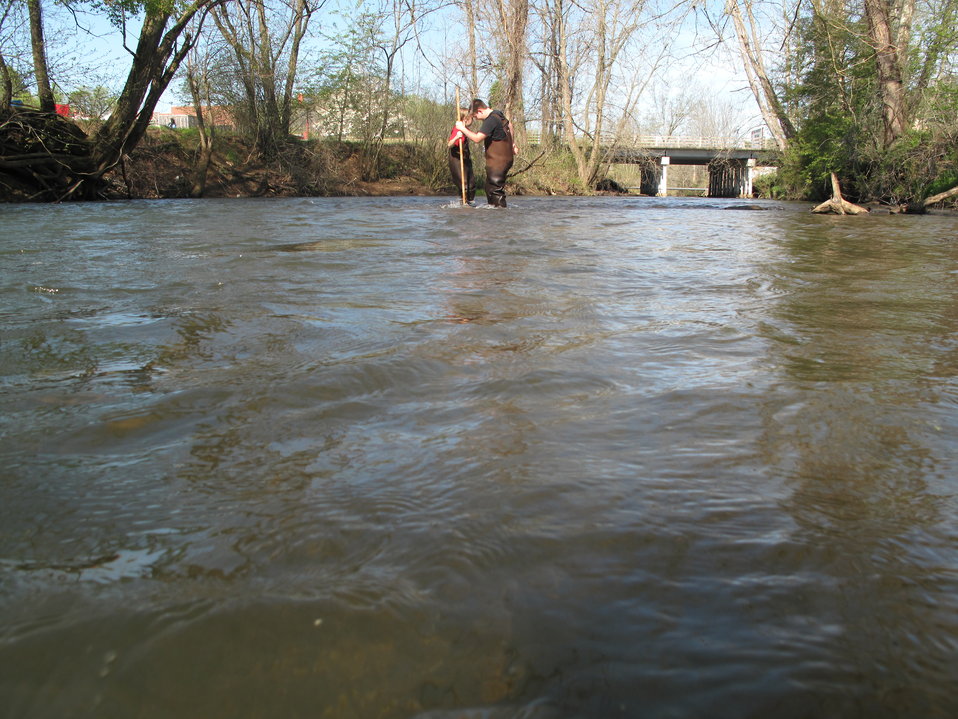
Pari of students kicking up insects

Over the course of four days in late April 2014, every eighth grade student at North Carolina’s Macon Middle School, Highlands School, Nantahala School, and Trimont Christian Academy visited Cartoogechaye Park, in Macon County, to learn about rivers.

The students rotated through four stations:
1) water chemistry where they had the opportunity to help test water from Cartoogechaye Creek to gain an idea of the stream’s water quality;
2) aquatic insects, where students collected and identified animals like mayflies and caddisflies, learning how life in the river reflects the health of the river
3) fish, where they were able to collect and identify fish in the stream, and then
4) stream flow, where they measured and calculated the downstream movement of water, including the velocity of the water and the total volume of water being moved per second.

The event was organized by the University of Georgia's Coweeta Long-Term Ecological Research (LTER) Program, which is based at the USFS Coweeta Hydrologic Laboratory. (coweeta.uga.edu/), with sizable support from the Land Trust for the Little Tennessee. Other supporters include the U.S. Fish and Wildlife Service, N.C. Natural Heritage Program, and N.C. Division of Water Resources.
Over the course of four days in late April 2014, every eighth grade student at North Carolina’s Macon Middle School, Highlands School, Nantahala School, and Trimont Christian Academy visited Cartoogechaye Park, in Macon County, to learn about rivers.

The students rotated through four stations:
1) water chemistry where they had the opportunity to help test water from Cartoogechaye Creek to gain an idea of the stream’s water quality;
2) aquatic insects, where students collected and identified animals like mayflies and caddisflies, learning how life in the river reflects the health of the river
3) fish, where they were able to collect and identify fish in the stream, and then
4) stream flow, where they measured and calculated the downstream movement of water, including the velocity of the water and the total volume of water being moved per second.

The event was organized by the University of Georgia's Coweeta Long-Term Ecological Research (LTER) Program, which is based at the USFS Coweeta Hydrologic Laboratory. (coweeta.uga.edu/), with sizable support from the Land Trust for the Little Tennessee. Other supporters include the U.S. Fish and Wildlife Service, N.C. Natural Heritage Program, and N.C. Division of Water Resources.